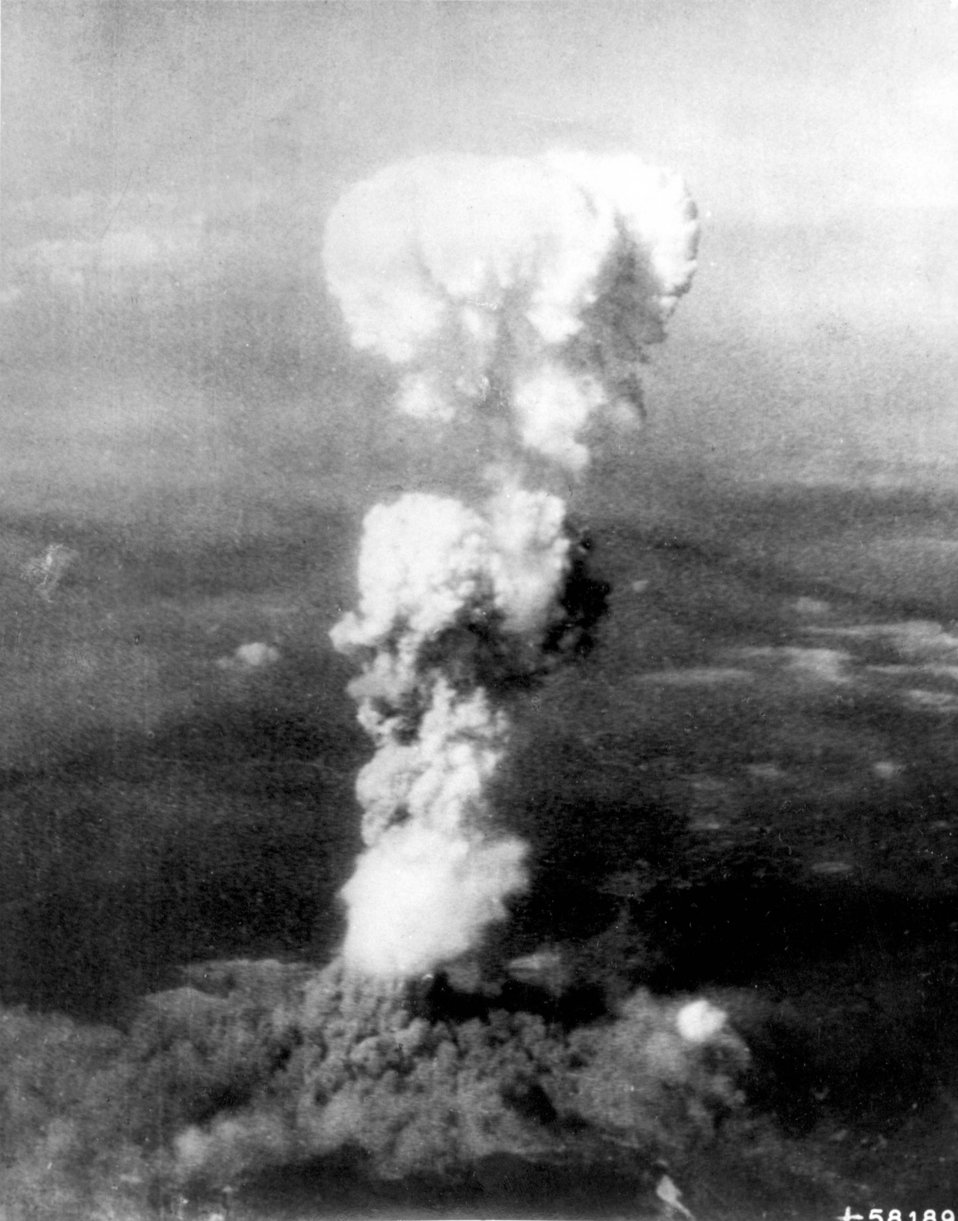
Hiroshima

1940's -- ATOMIC BURST. At the time this photo was made, smoke billowed 20,000 feet above Hiroshima while smoke from the burst of the first atomic bomb had spread over 10,000 feet on the target at the base of the rising column. August 5, 1945. Two planes of the 509th Composite Group, part of the 313th Wing of the 20th Air Force, participated in this mission; one to carry the bomb, and the other to act as escort.